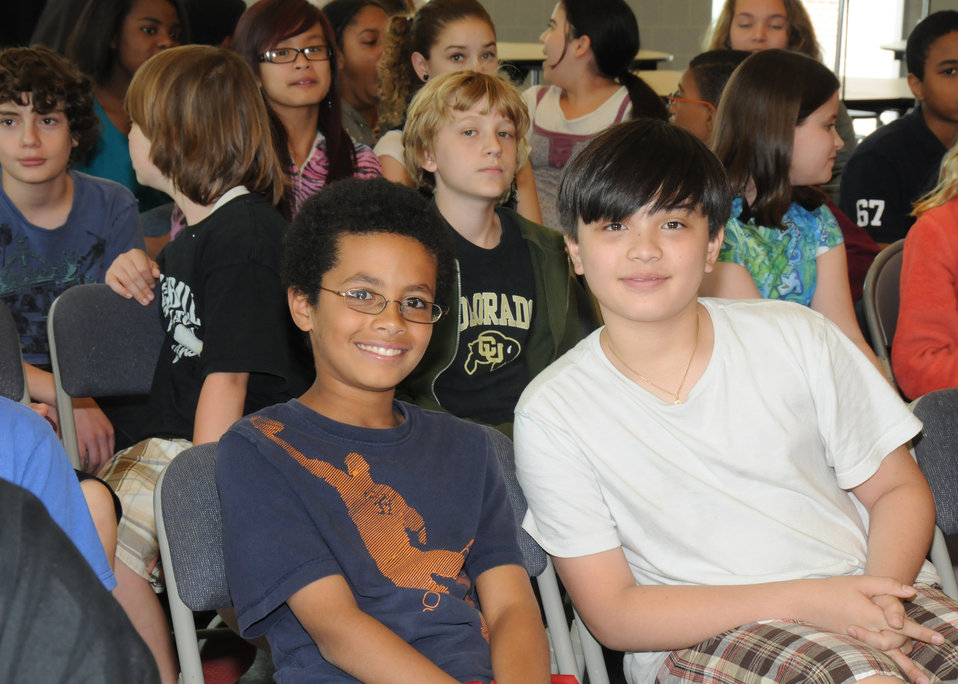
Alice Deal Middle School 6th graders attending the promotion of the “Healthy Schools” legislation passed by the D.C. Council. Agriculture Secretary Tom Vilsack spoke about the important role that the Department of Agriculture will play in implementing the recommendations from the Childhood Obesity Task Force’s action plan, “Solving the Problem of Childhood Obesity Within a Generation” the event took place in Washington, D. C., on Thursday, May 13, 2010. USDA photo 10di1358-19